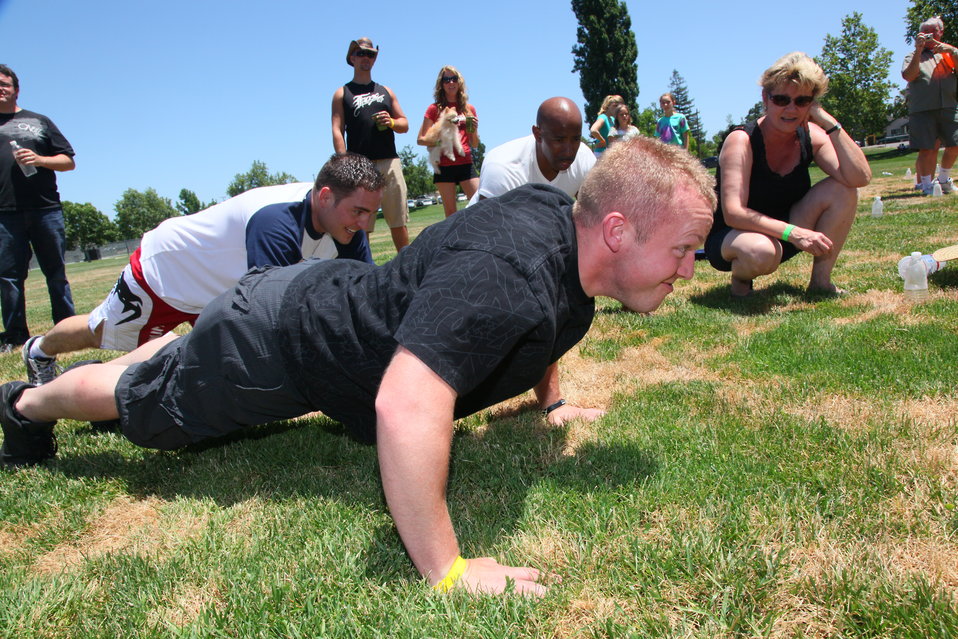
2011 Annual Picnic